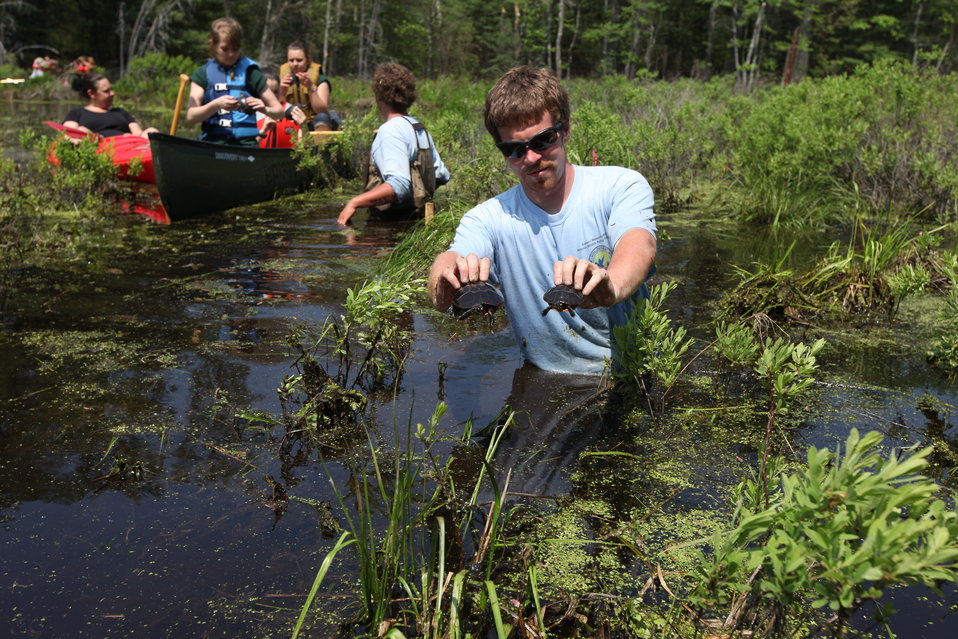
Releasing Turtles

Blanding's turtle release, Assabet River, MA.